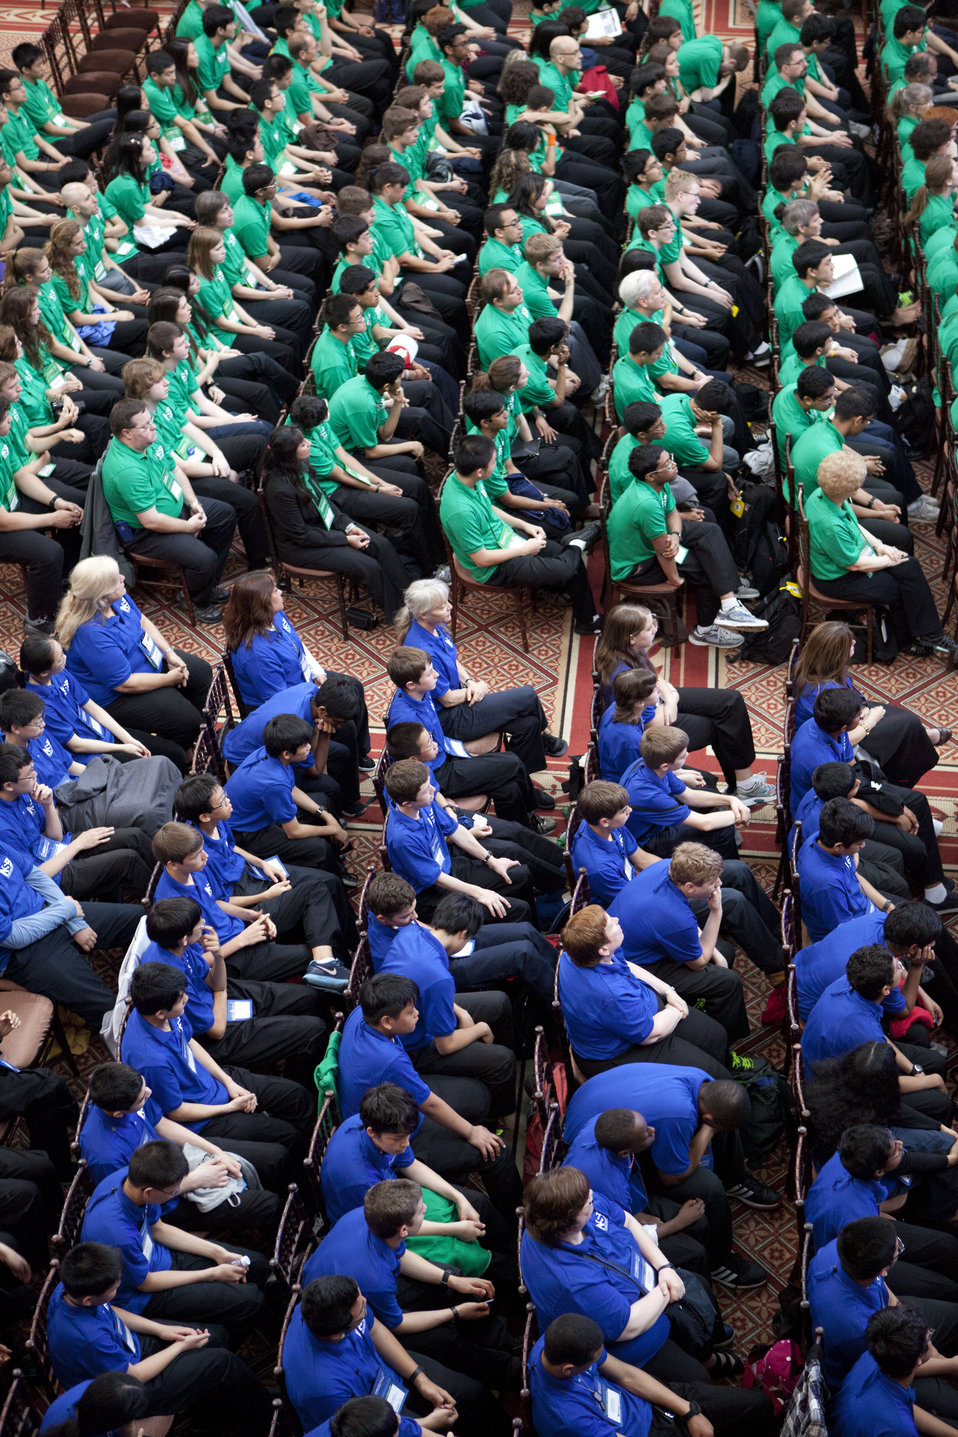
National Science Bowl

All participants in the National Science Bowl events attended the final rounds of competition. Middle school participants are in blue shirts, while high school participants are in green.